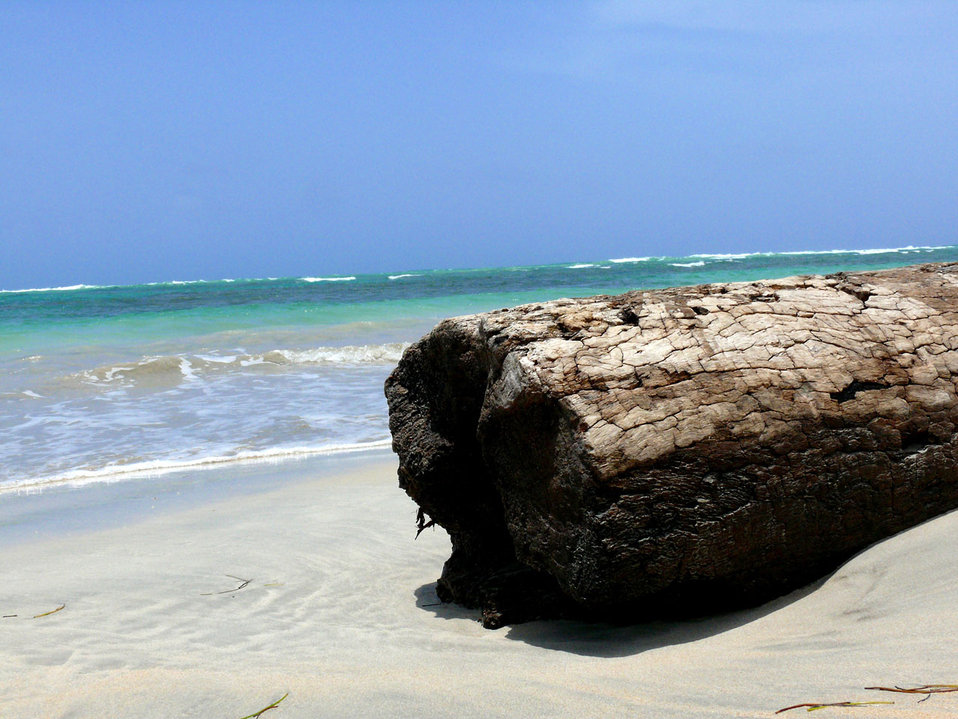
Wood on the beach.